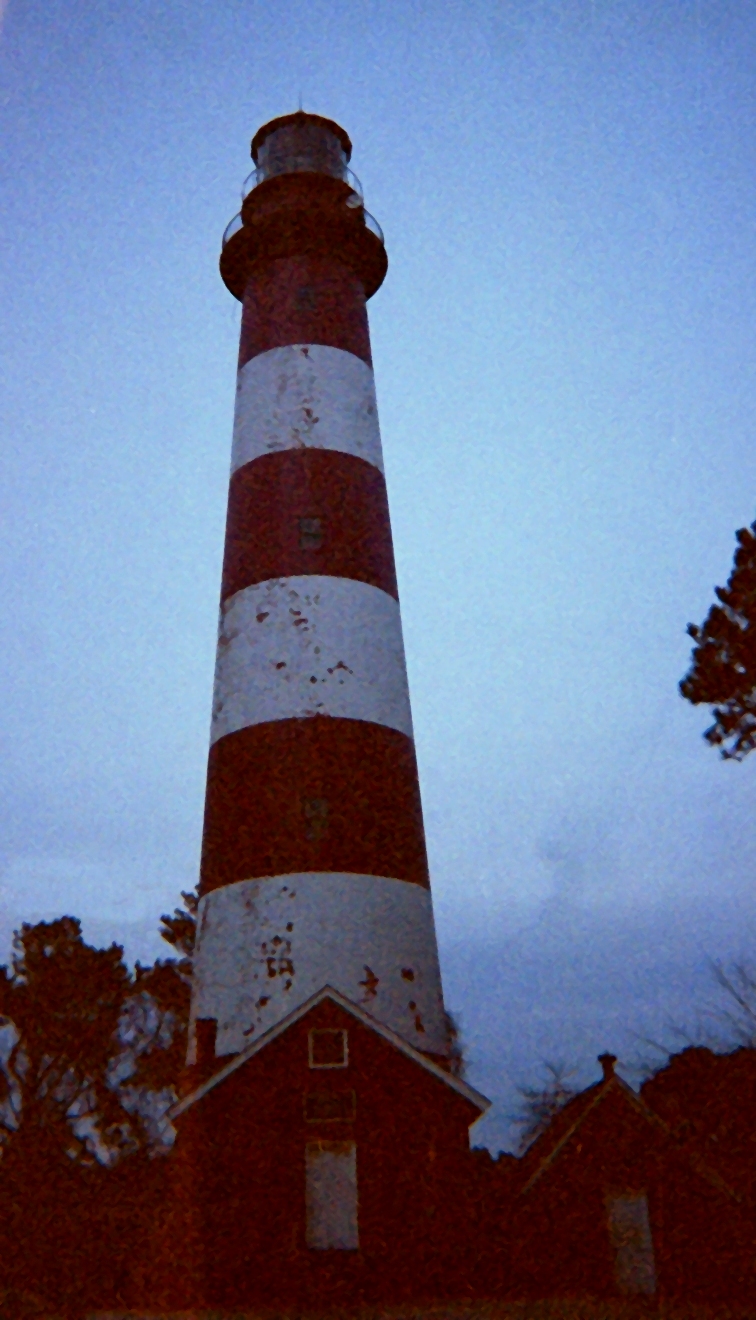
Assateague Lighthouse at dusk.